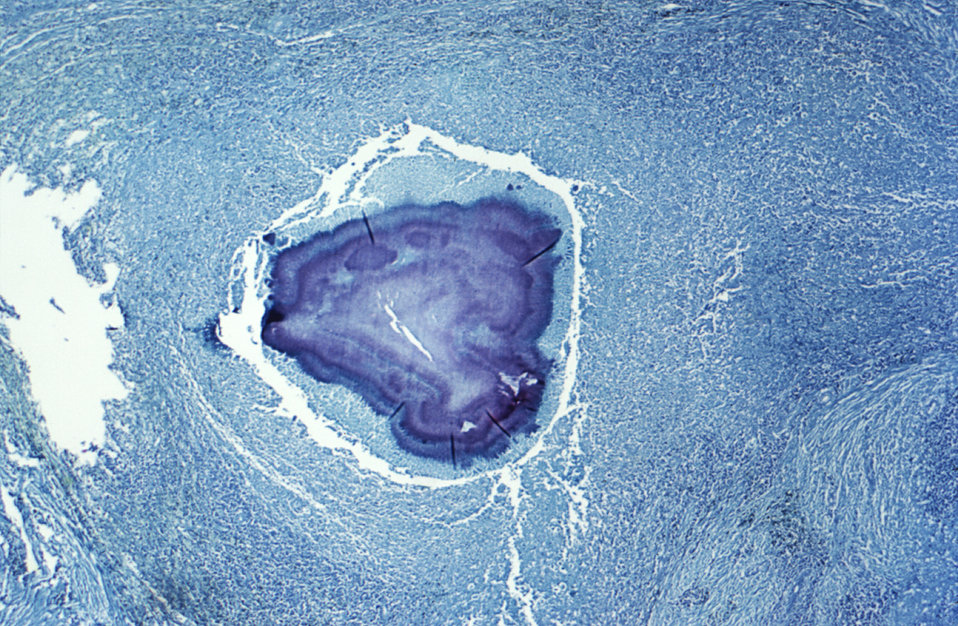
Magnified only 25X, this acid-fast (AF) stained tissue specimen revealed the presence of Gram-positive Actinomadura madurae bacterial organisms in the form of a chronic granulomatous inflammatory granule.